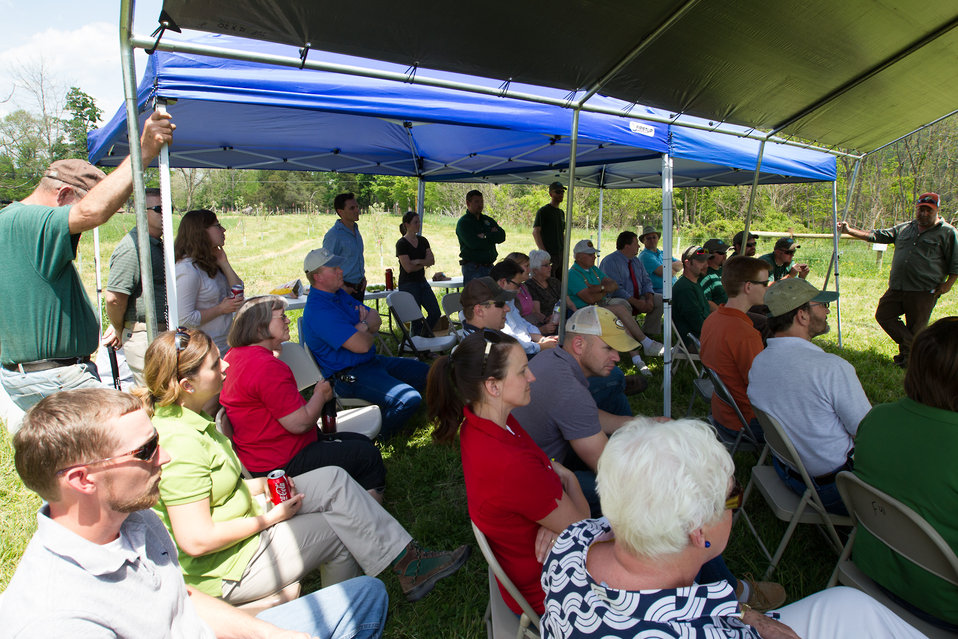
Celebrating 1 Million Feet of Conservation Fence in WV

Partners for Fish and Wildlife Program